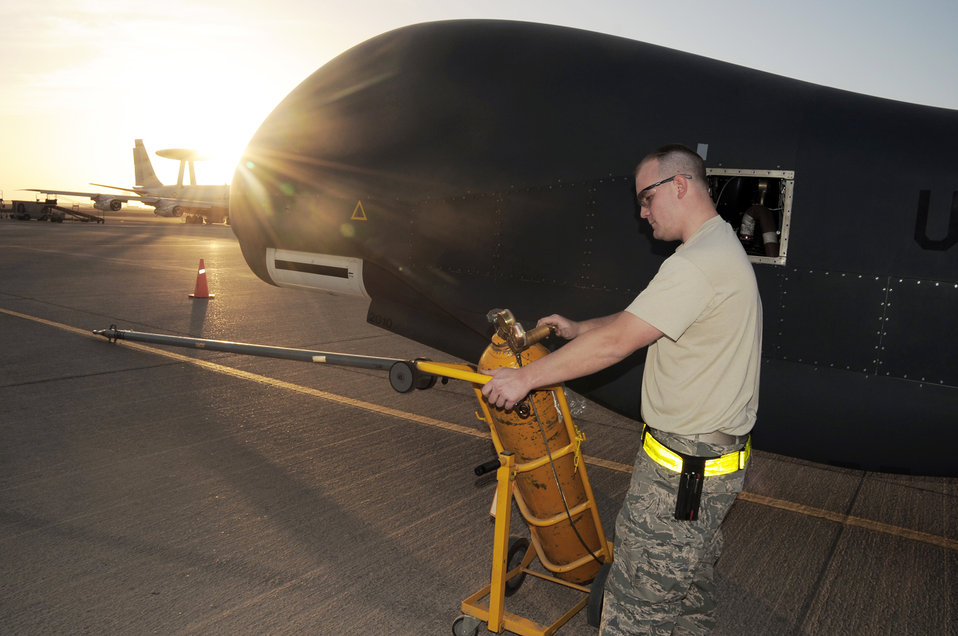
Deployed Global Hawks surpass 30,000 combat flying hours, 1,500 sorties

Staff Sgt. Michael Goenner goes through pre-flight servicing while preparing an RQ-4 Global Hawk for a combat mission Feb. 12, 2010, in Southwest Asia. The RQ-4s, assigned to the 380th Air Expeditionary Wing and deployed from Beale Air Force Base, Calif., achieved 1,500 combat sorties and 30,000 combat flying hours on Feb. 10 and 11 respectively. Sergeant Goenner is an RQ-4 Global Hawk crew chief with the 380th Expeditionary Aircraft Maintenance Squadron Hawk aircraft maintenance unit.